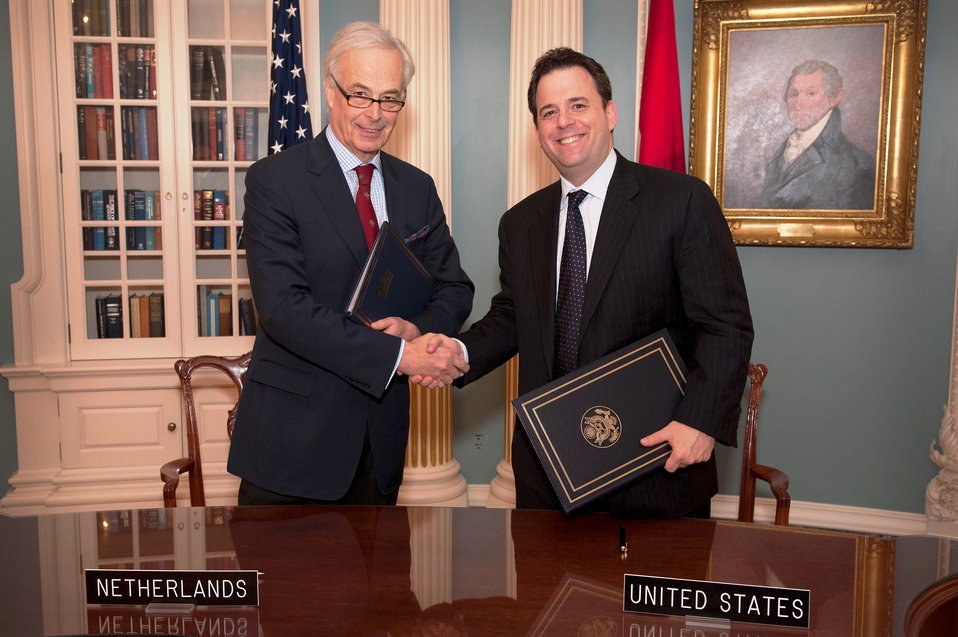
Assistant Secretary Shapiro and Ambassador Bekink Shake Hands

Assistant Secretary of State for Political-Military Affairs Andrew J. Shapiro and Kingdom of the Netherlands Ambassador Rudolf Bekink shake hands after signing a new U.S.-Kingdom of the Netherlands Status of Forces Agreement covering the Kingdom’s territories in the Caribbean at the U.S. Department of State, October 19, 2012.